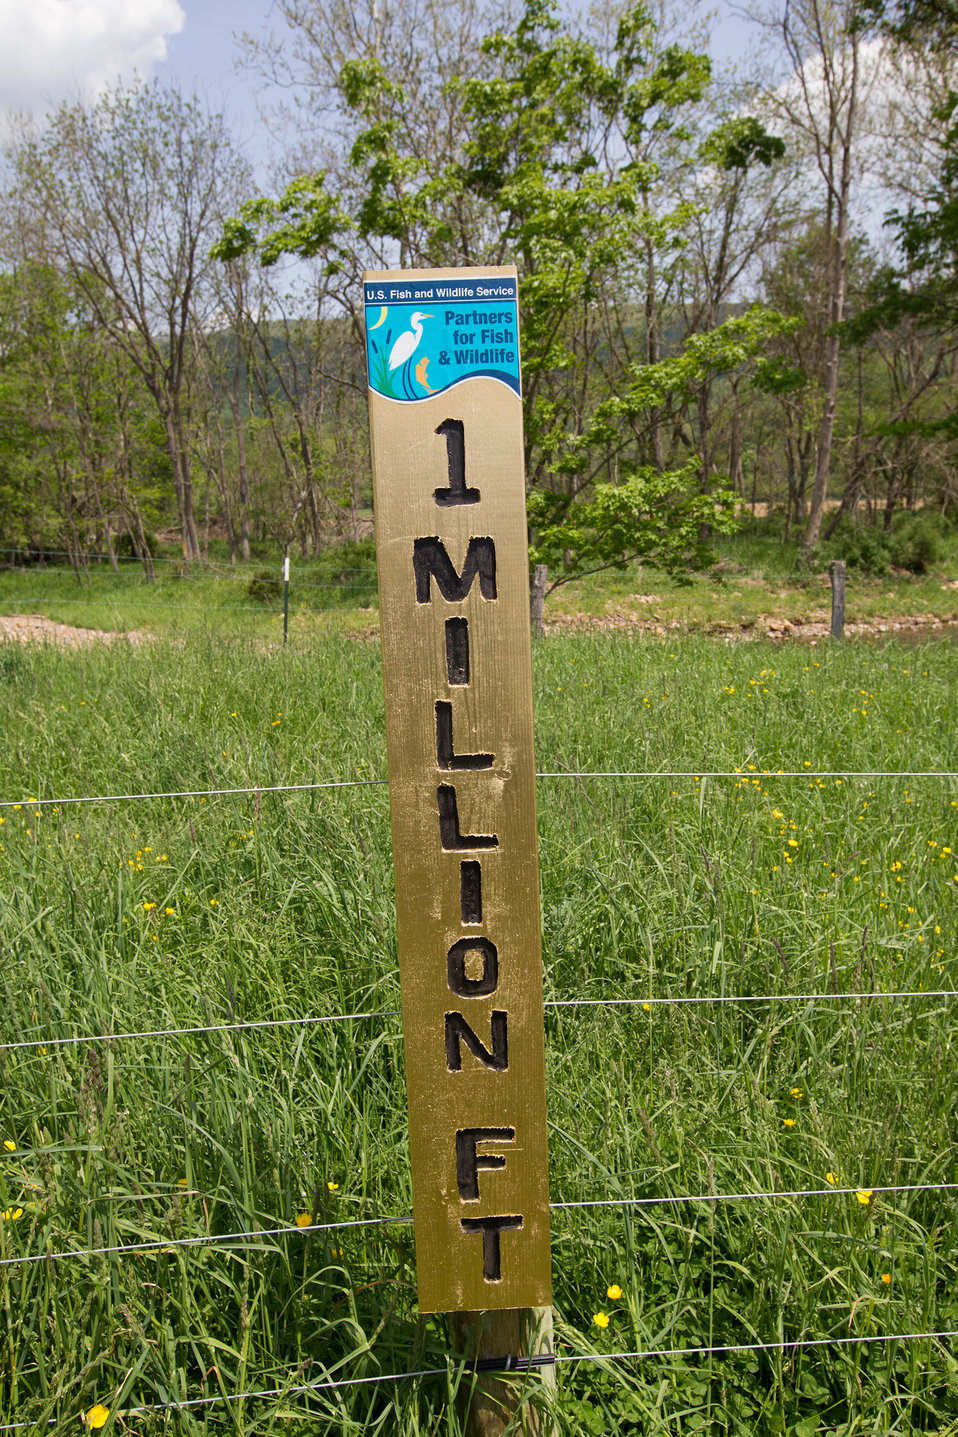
Celebrating 1 Million Feet of Conservation Fence in WV

Partners for Fish and Wildlife Program